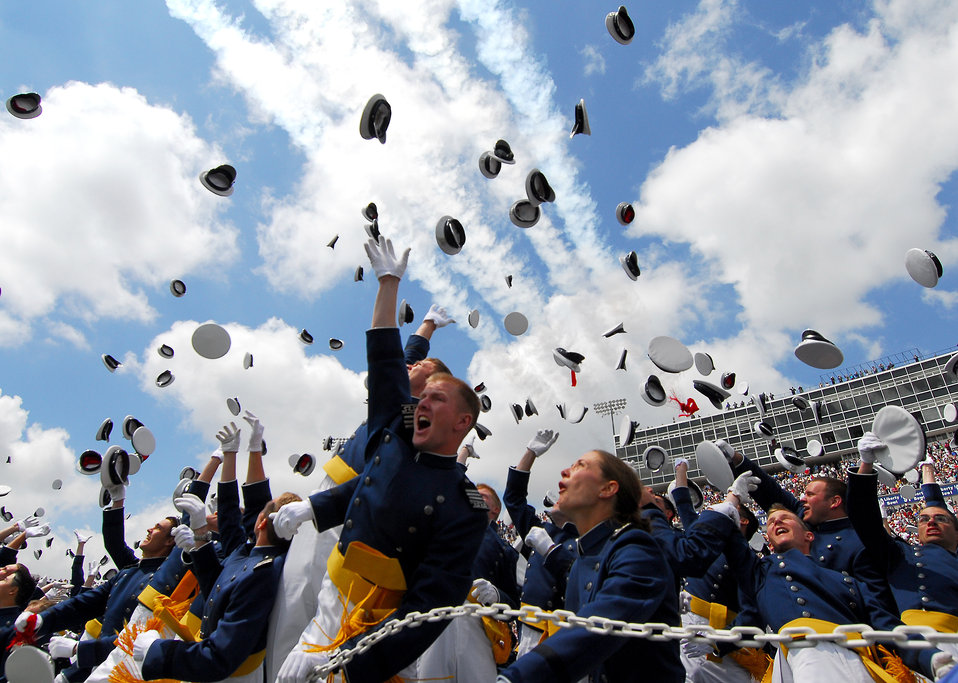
Rumsfeld voices confidence in academy graduating class

New lieutenants let their hats fly as they are dismissed from the U.S. Air Force Academy graduation ceremony in Colorado Springs, Colo., on Wednesday, May 31, 2006. The 879 graduates of the class of 2006 incur a five-year active duty service commitment. Secretary of Defense Donald H. Rumsfeld was the guest speaker at the commencement.